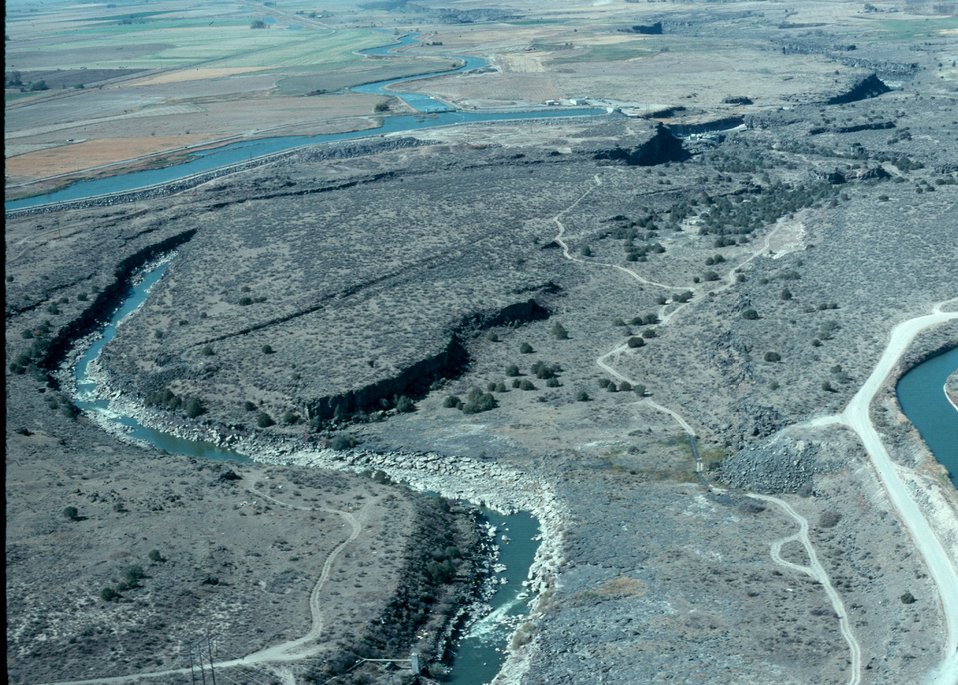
Where flood waters have cut across Four Rivers LSRD Lower Snake River District